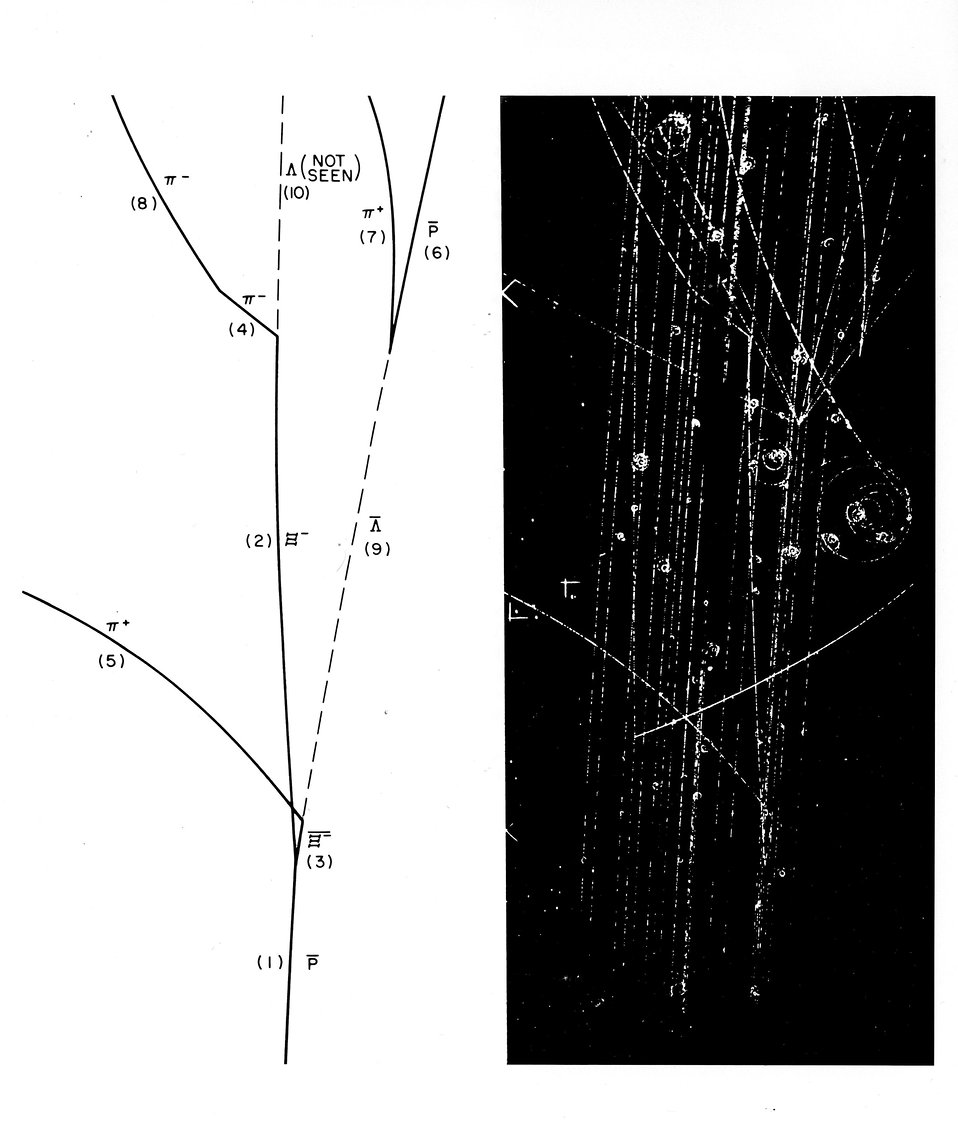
Liquid hydrogen bubble chamber photograph of an anti-proton
colliding with a proton, resulting in production of a cascade Hyperion pair.